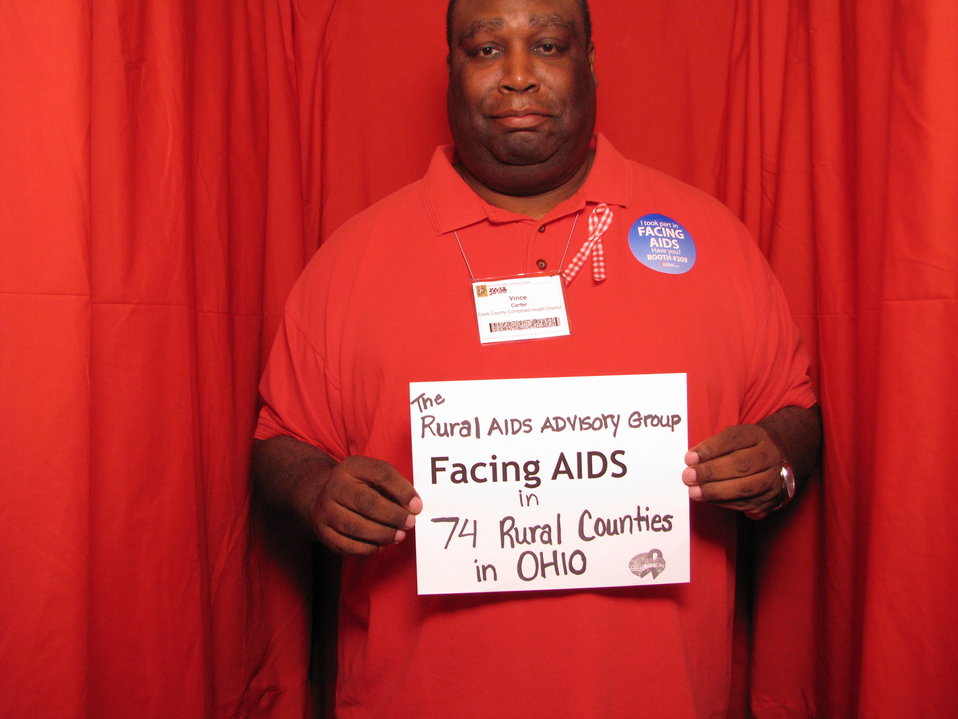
The Rural AIDS Advisory Group FACING AIDS in 74 Rural Counties in OHIO.

From the AIDS.gov photo booth at the U.S. Conference on AIDS, September 2010 (Orlando, FL).